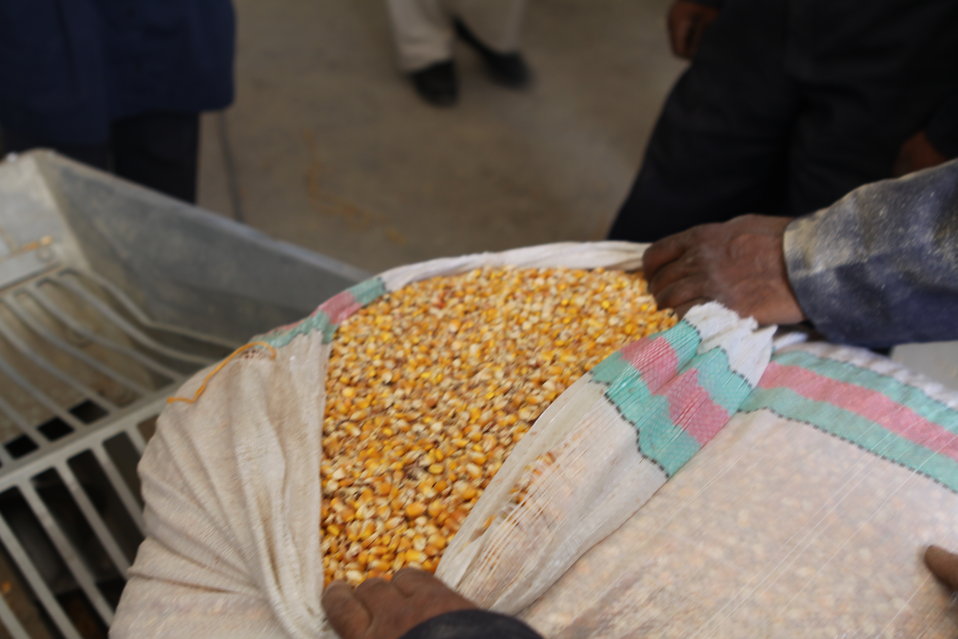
Bolan Poultry Farm